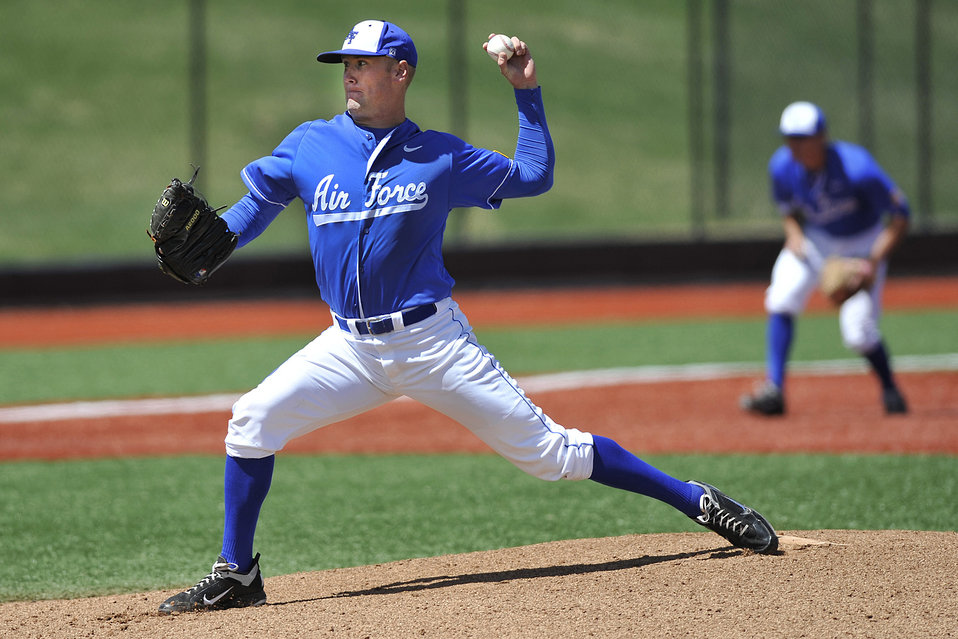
Falcons vs. Aztecs

Sophomore left-hander Ben Bertelson stretches to throw a pitch during a match against San Diego State April 22, 2011, at Falcon Field in Colorado Springs, Colo. Bertelson allowed just one hit over 8 innings as the Falcons defeated the Aztecs 7-3. The win was the first for the Falcons against the Aztecs in 35 contests dating back to 2003.